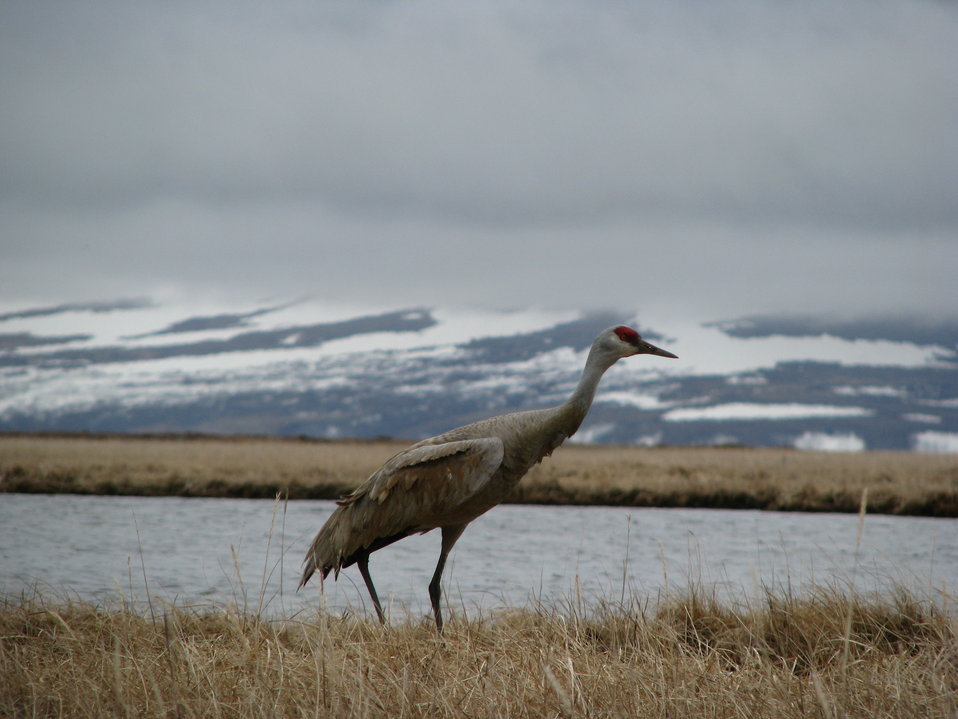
Sandhill Crane

Yukon Delta NWR